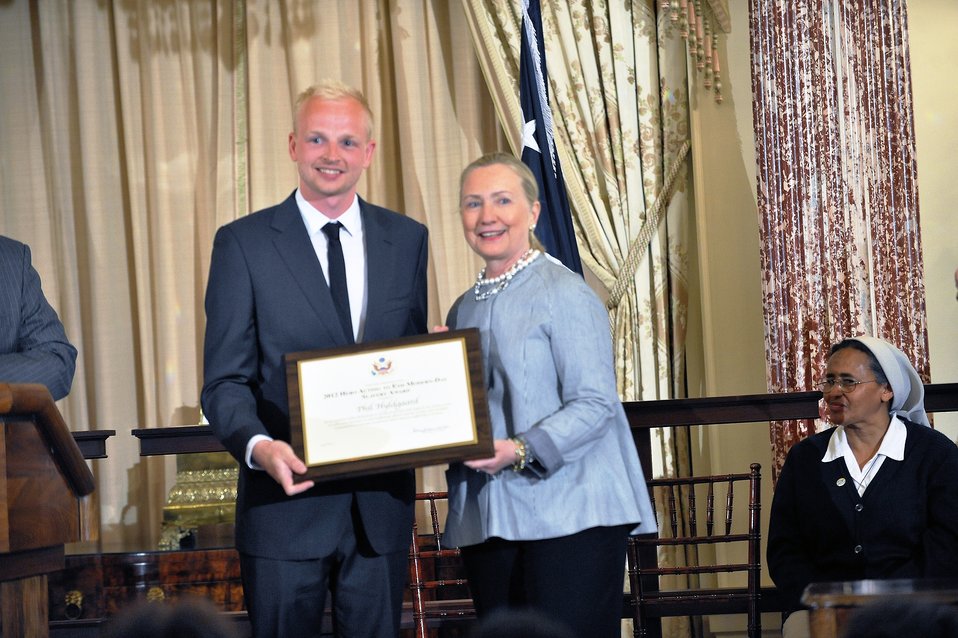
Secretary Clinton With TIP Hero Phil Hyldgaard

U.S. Secretary of State Hillary Rodham Clinton honors Phil Hyldgaard of Greece, a 2012 Trafficking in Persons (TIP) Report Hero, at the U.S. Department of State in Washington, D.C., on June 19, 2012.